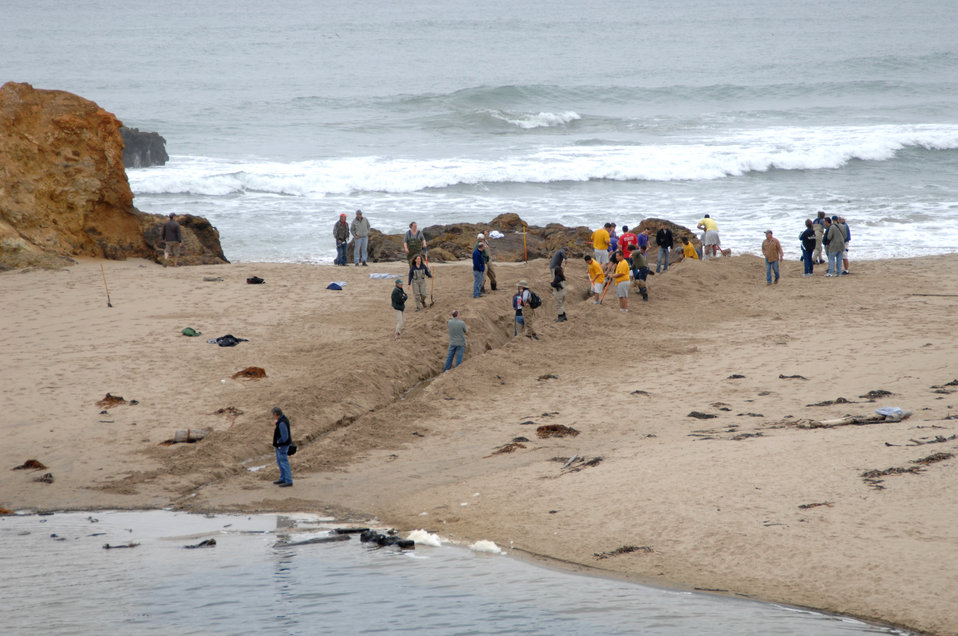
Pescadero Breach 11